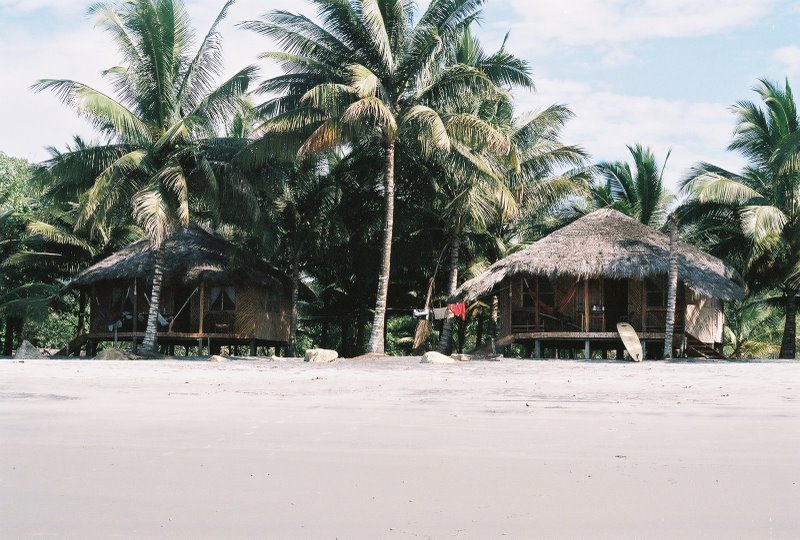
The hostel at the southernmost shore of the bay, Mompiche. 03/05/2006, John Clark